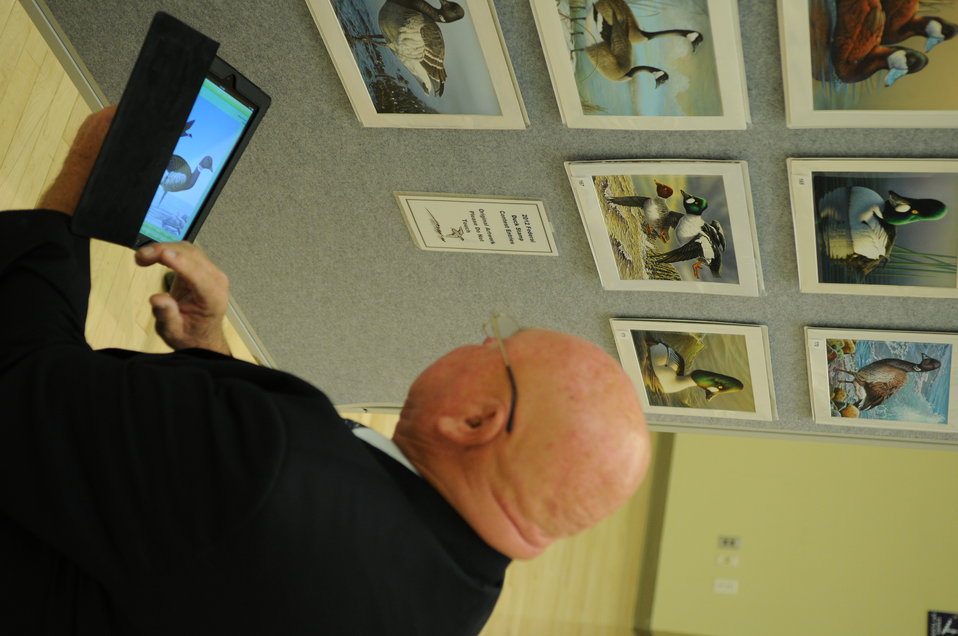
Judging

The U.S. Fish & Wildlife Service sponsored the 2012 Federal Duck Stamp Art Contest September 28 and 29 in Ogden, Utah, at Weber State University. A panel of five judges was responsible for choosing the art work used to design the 2013-2014 Migratory Bird Hunting and Conservation Stamp.